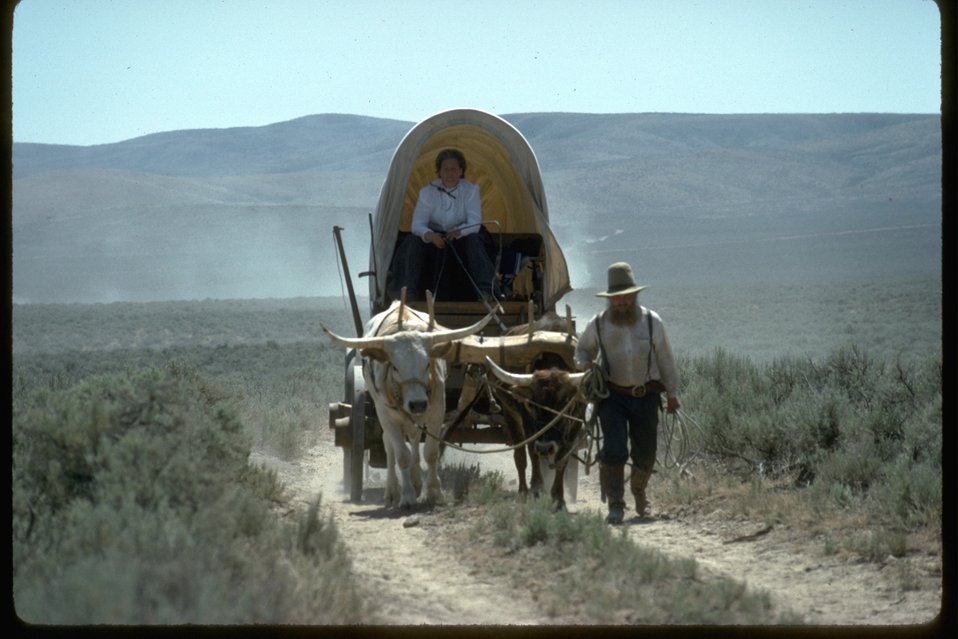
Wagon Train Scene, with a wagon and an ox.